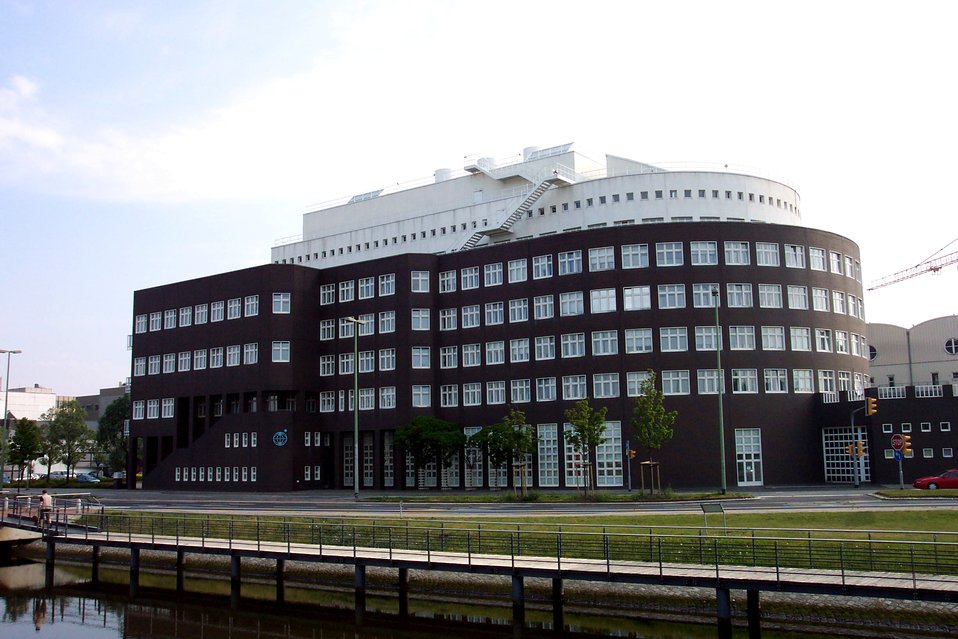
Alfred Wegener Institute at Bremerhaven.